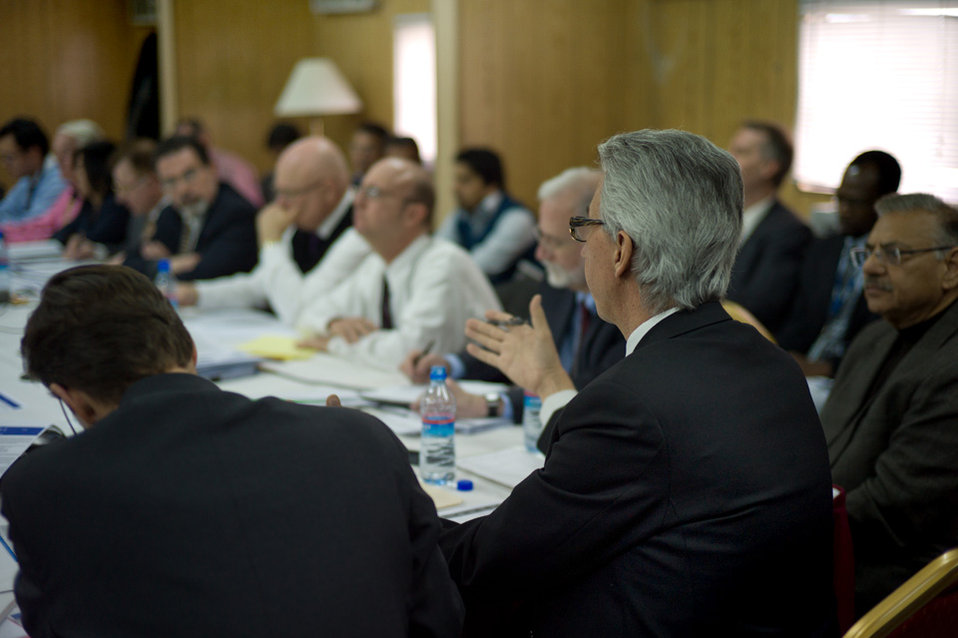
Greg Huger makes a point